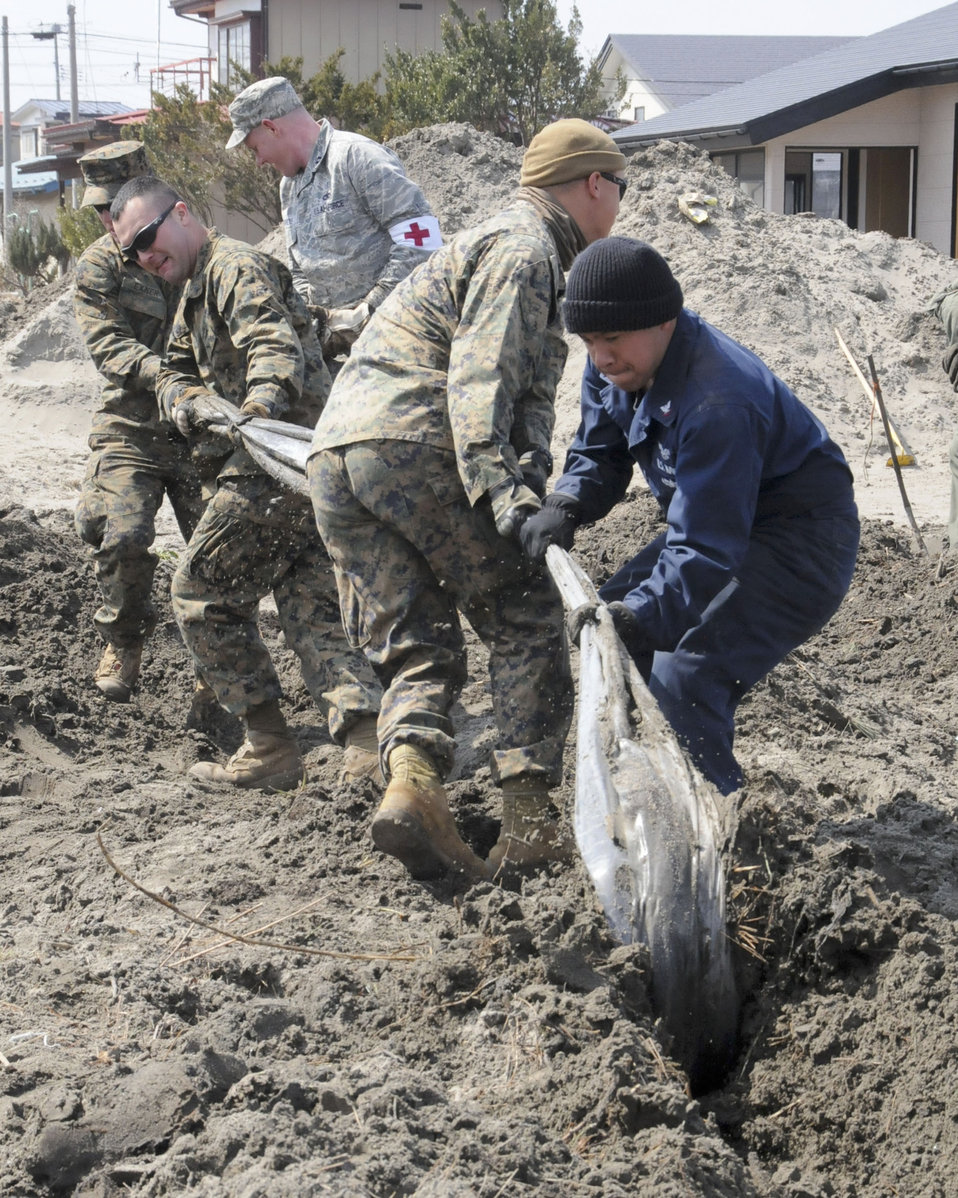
Misawa helps

Service members from the Air Force, Navy, and Marine Corps work together April 1, 2011, to free a plastic sheet from mud and sand at a strawberry farm in Hachinohe, Japan.